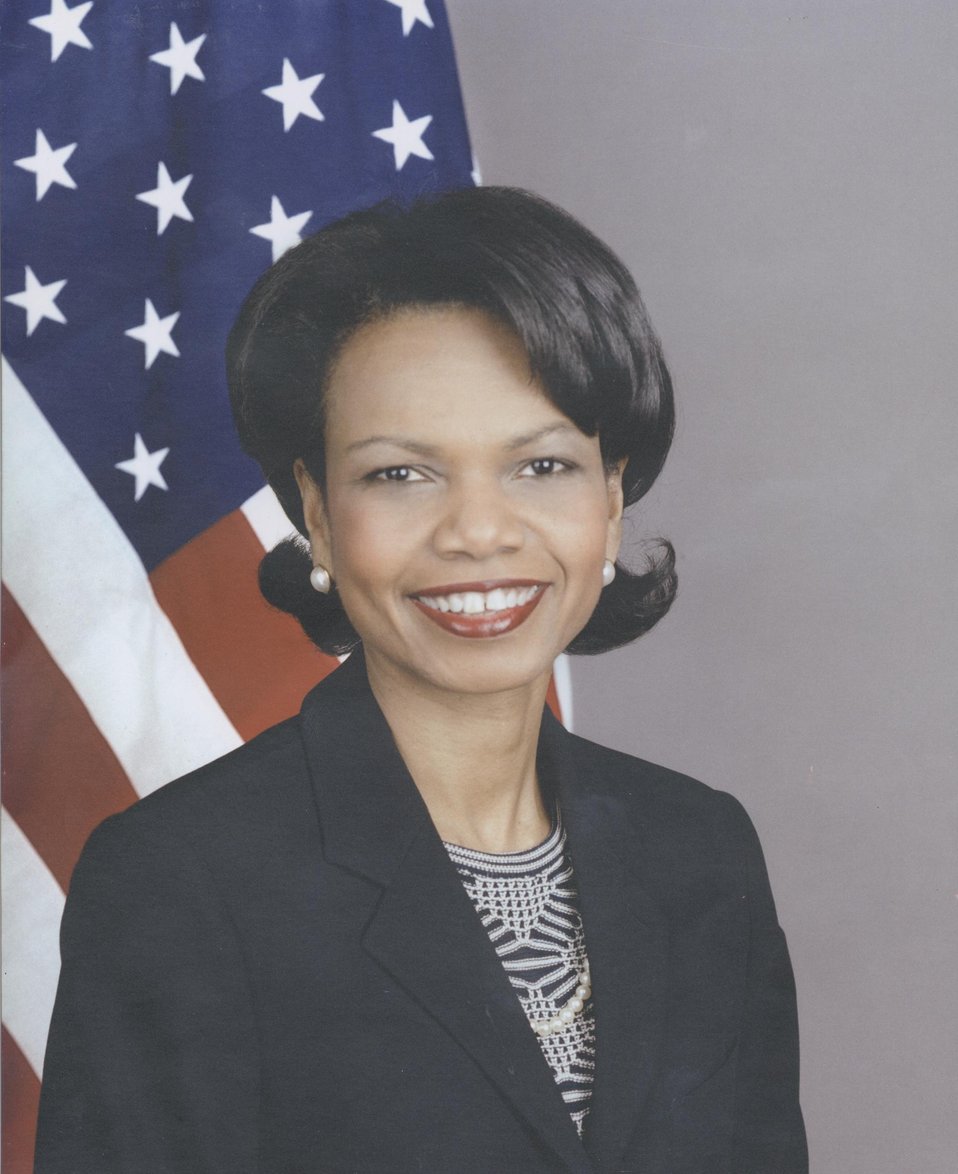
Condoleezza Rice, U.S. Secretary of State, January 26, 2005 to January 20, 2009.